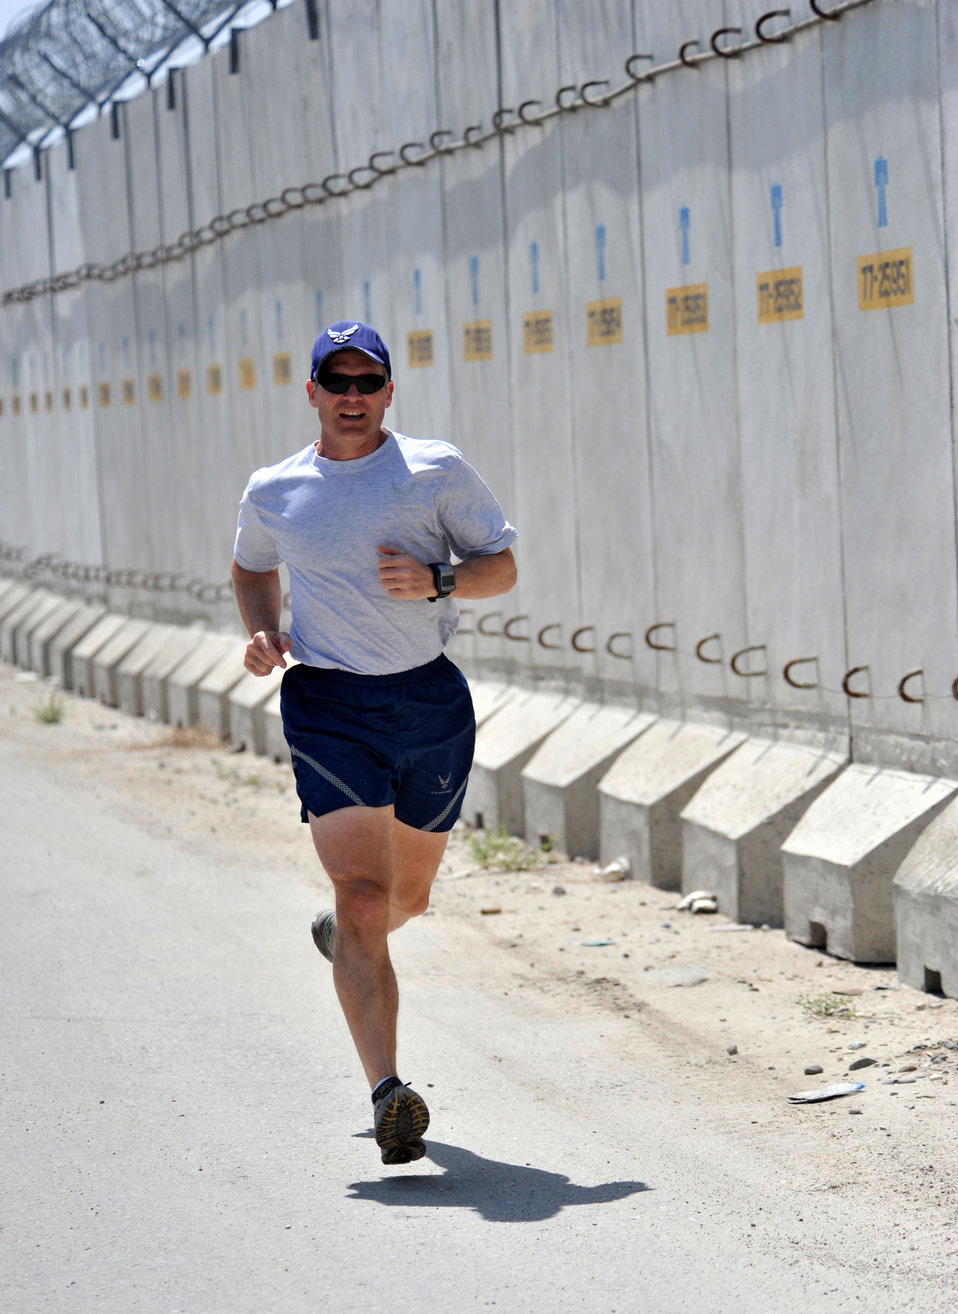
Officer finds niche

Col. (Dr.) Christian Benjamin takes off on his daily run April 12, 2011, at Bagram Airfield, Afghanistan. Dr. Benjamin is the commander of the 455th Expeditionary Medical Group. Over the course of 12 years, he has run more than halfway around the world, including more than 2,750 miles during deployment to Iraq and Afghanistan.